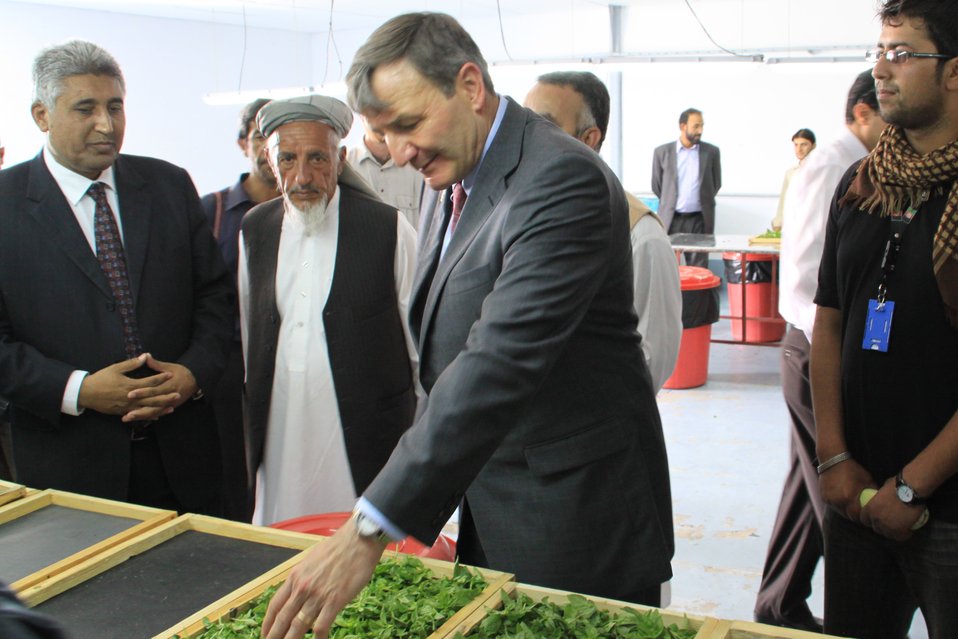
Badam Bagh Farm